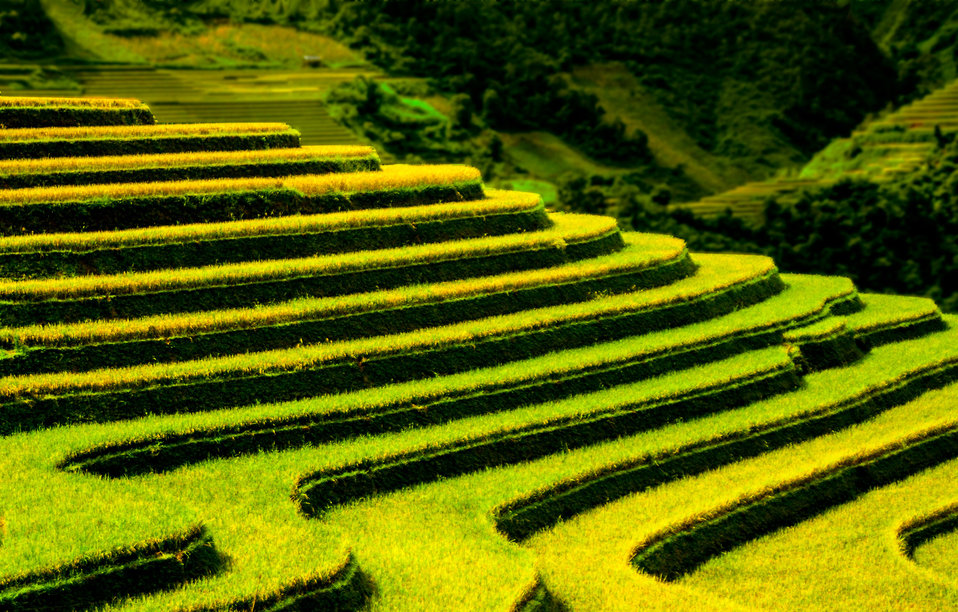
Waves of terraced fields

Terraced fields in mu cang chai district, yen bai, vietnam's northwest.